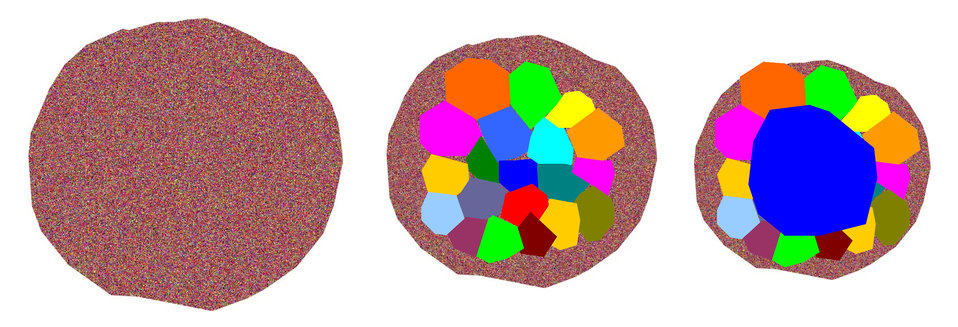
2-D Bose-Einstein condensates (BECs); Berezinskii, Kosterlitz and Thouless (BKT) transition

A gas of atoms arranged in a single, flat layer ordinarily has 'thermal' behavior (left) in which the atoms act as individual entities. At lowered temperatures, the gas transforms into a 'quasi-condensate' (middle) consisting of little islands (schematically represented as colored blobs) that fluctuate in time; within each island atoms act as a single coordinated entity. At lower temperatures still, the gas enters the superfluid 'BKT' phase (right): the islands start to coalesce and atoms can flow frictionlessly within the merged area.